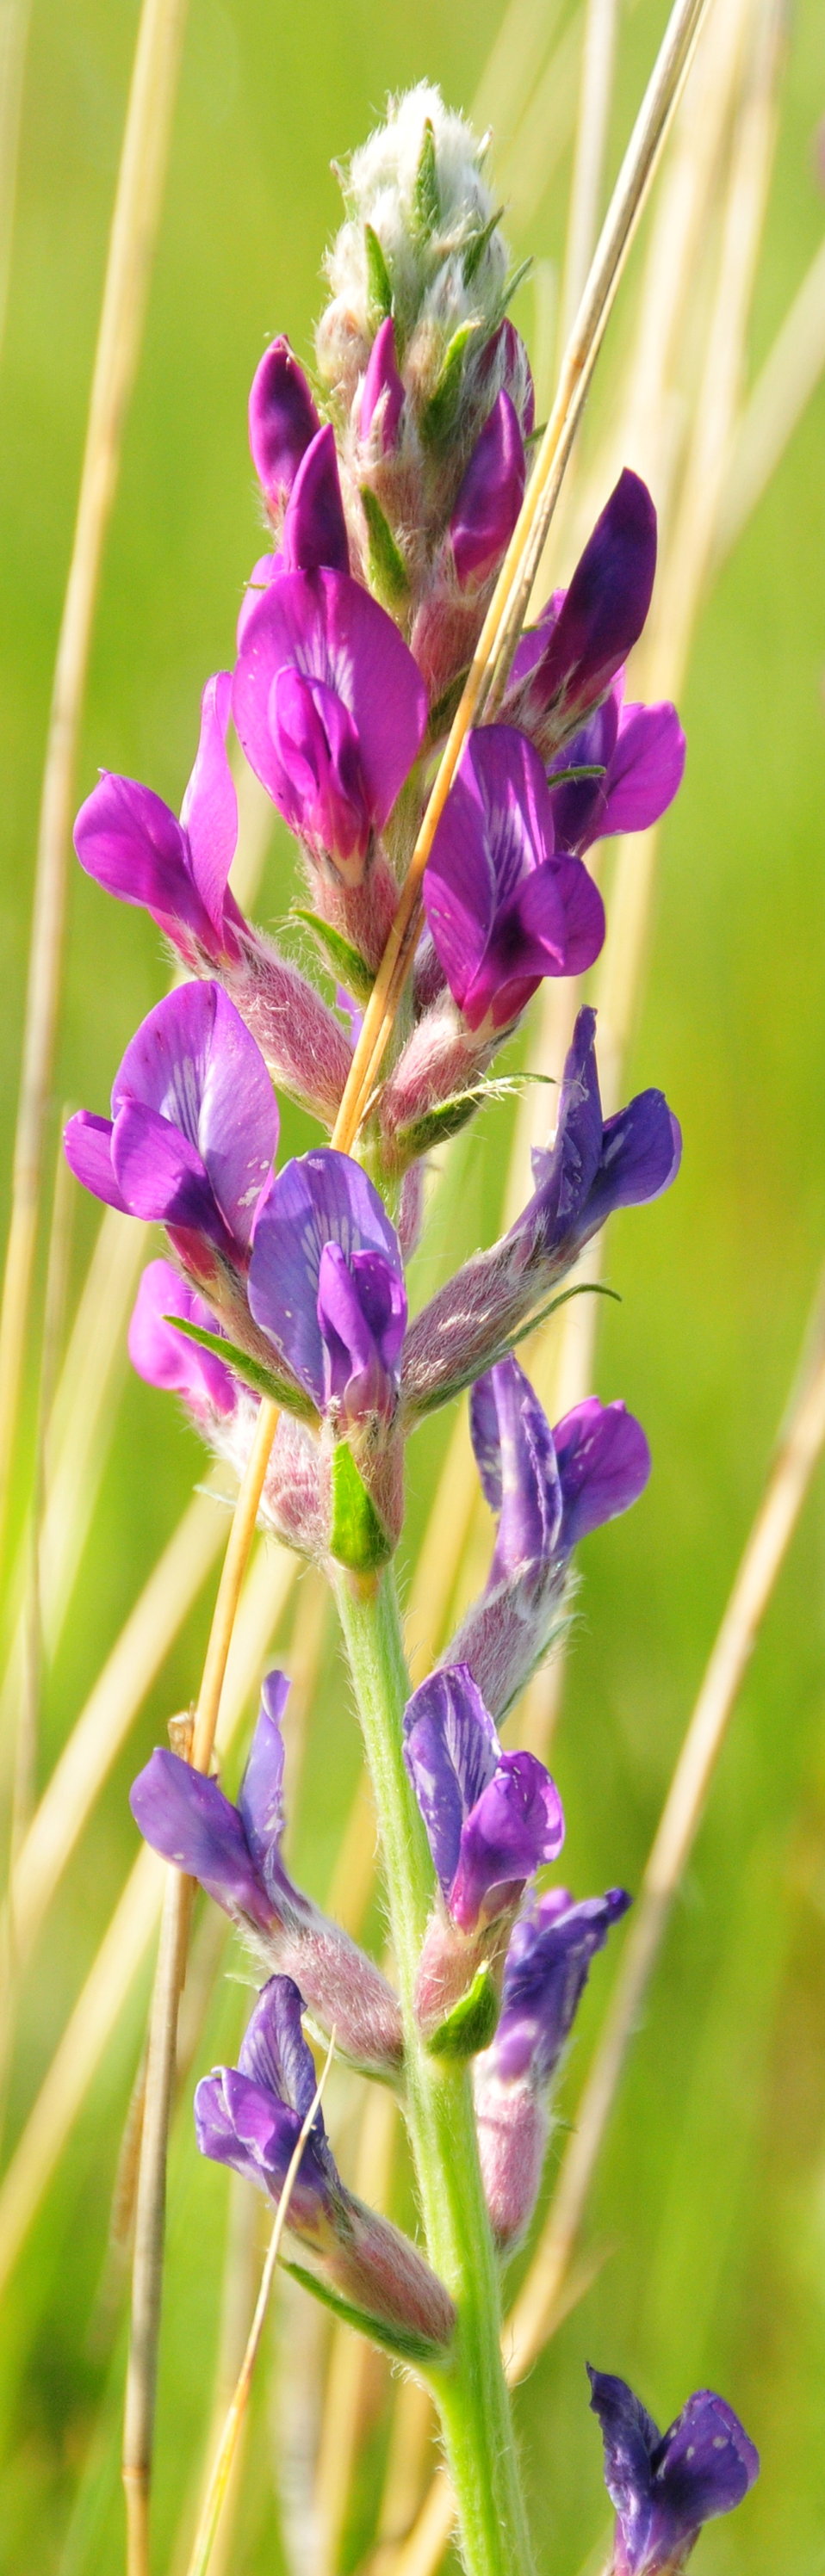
Lambert Crazyweed (Oxytropis lambertii) on Sand Lake Wetland Management District 01

Lambert Crazyweed (Oxytropis lambertii) colors the mixed grass prairie on Sand Lake Wetland Management District.